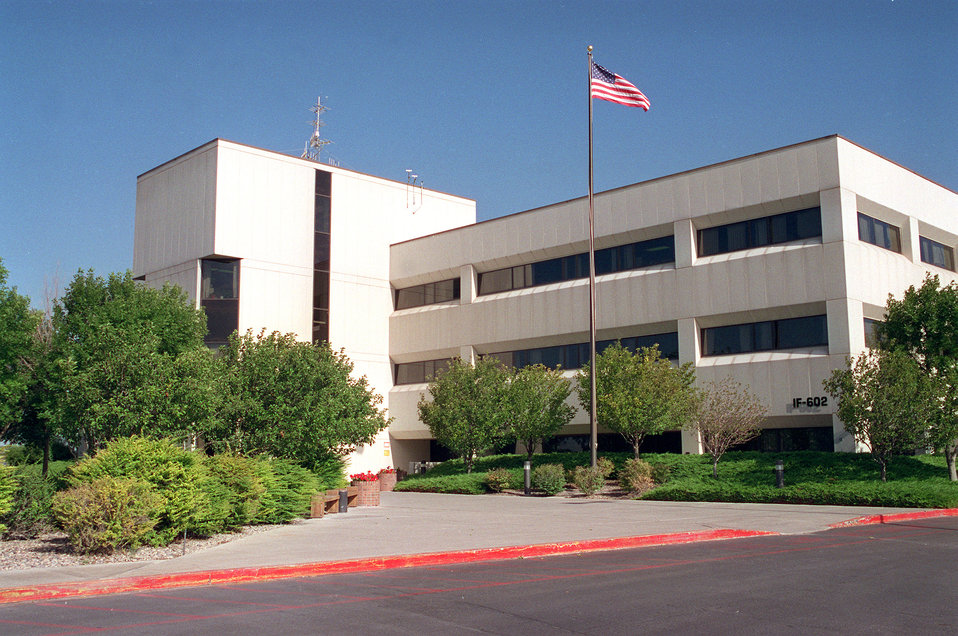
Idaho National Laboratory's Research Center is part of the lab's expanding research and education campus in Idaho Falls.